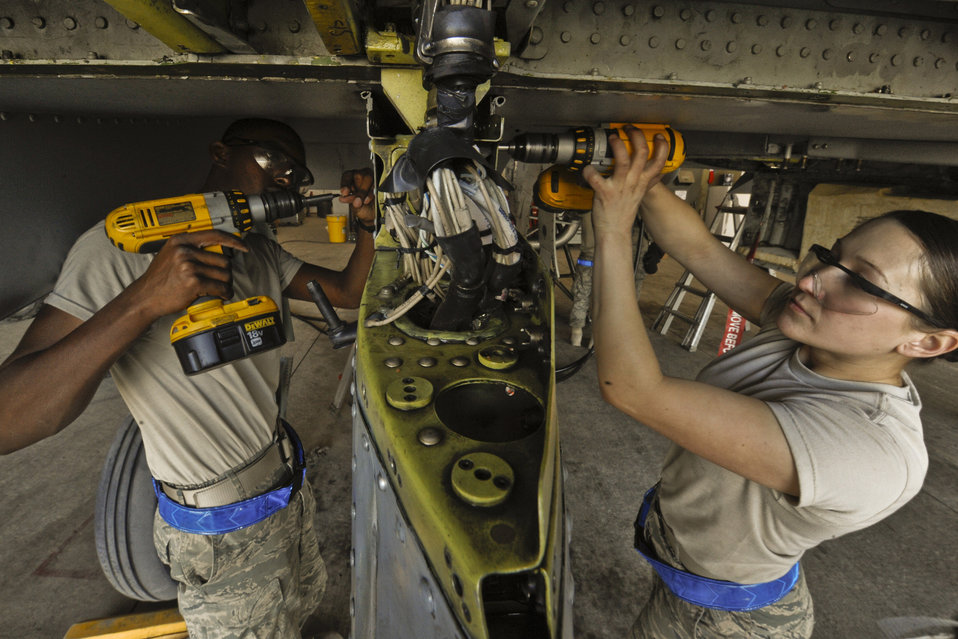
A-10s at Kandahar

Airman Derrick Coakley (left) and Senior Airman Sophia Ramallo perform maintenance on an A-10 Thunderbolt II at Kandahar Airfield, Afghanistan, Dec. 27, 2009. Airmen Coakley and Ramallo are assigned to the 451st Expeditionary Maintenance Squadron.